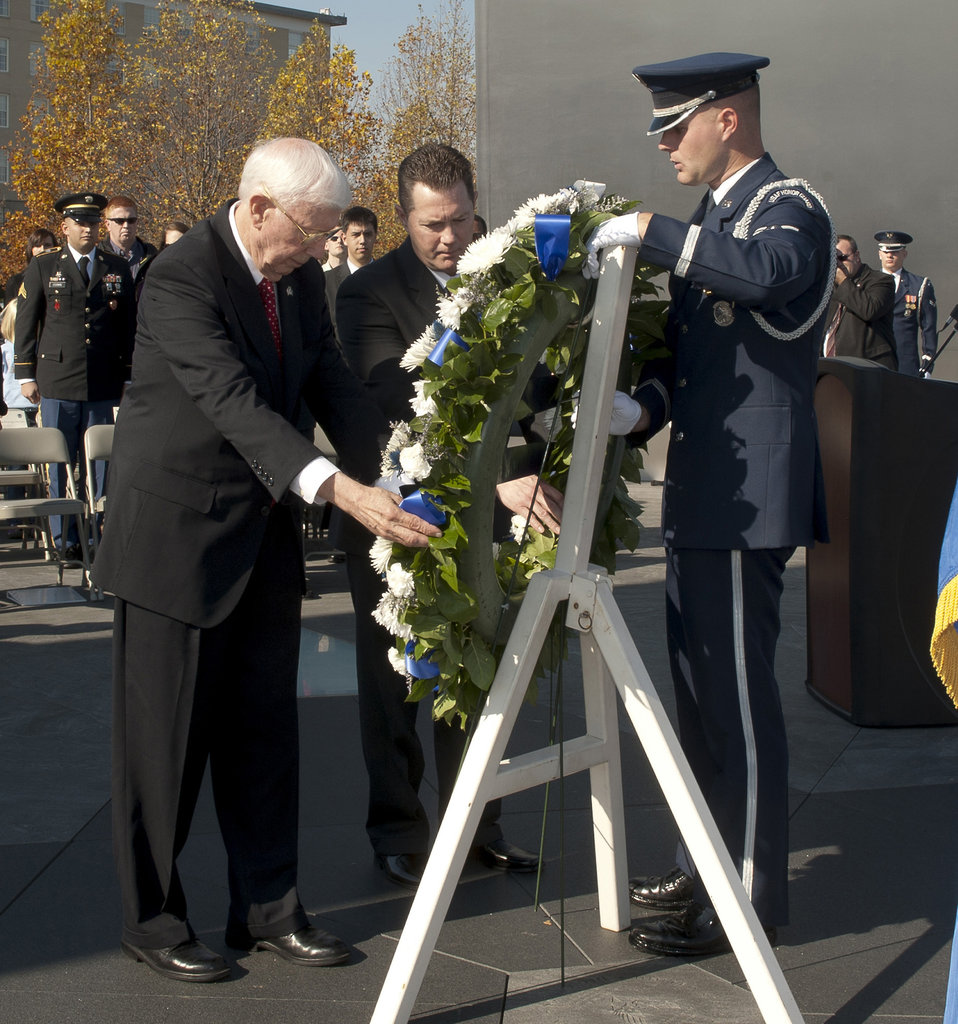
Veterans Day

Retired Gen. Richard Shaud, former executive director for the Air Force Association, and retired Chief Master Sgt. David Popp, deputy chief executive officer for the Air Force Sergeants Association, lay a wreath at the Air Force Memorial in observance of Veterans Day on Nov. 11, 2012, in Arlington, Va.